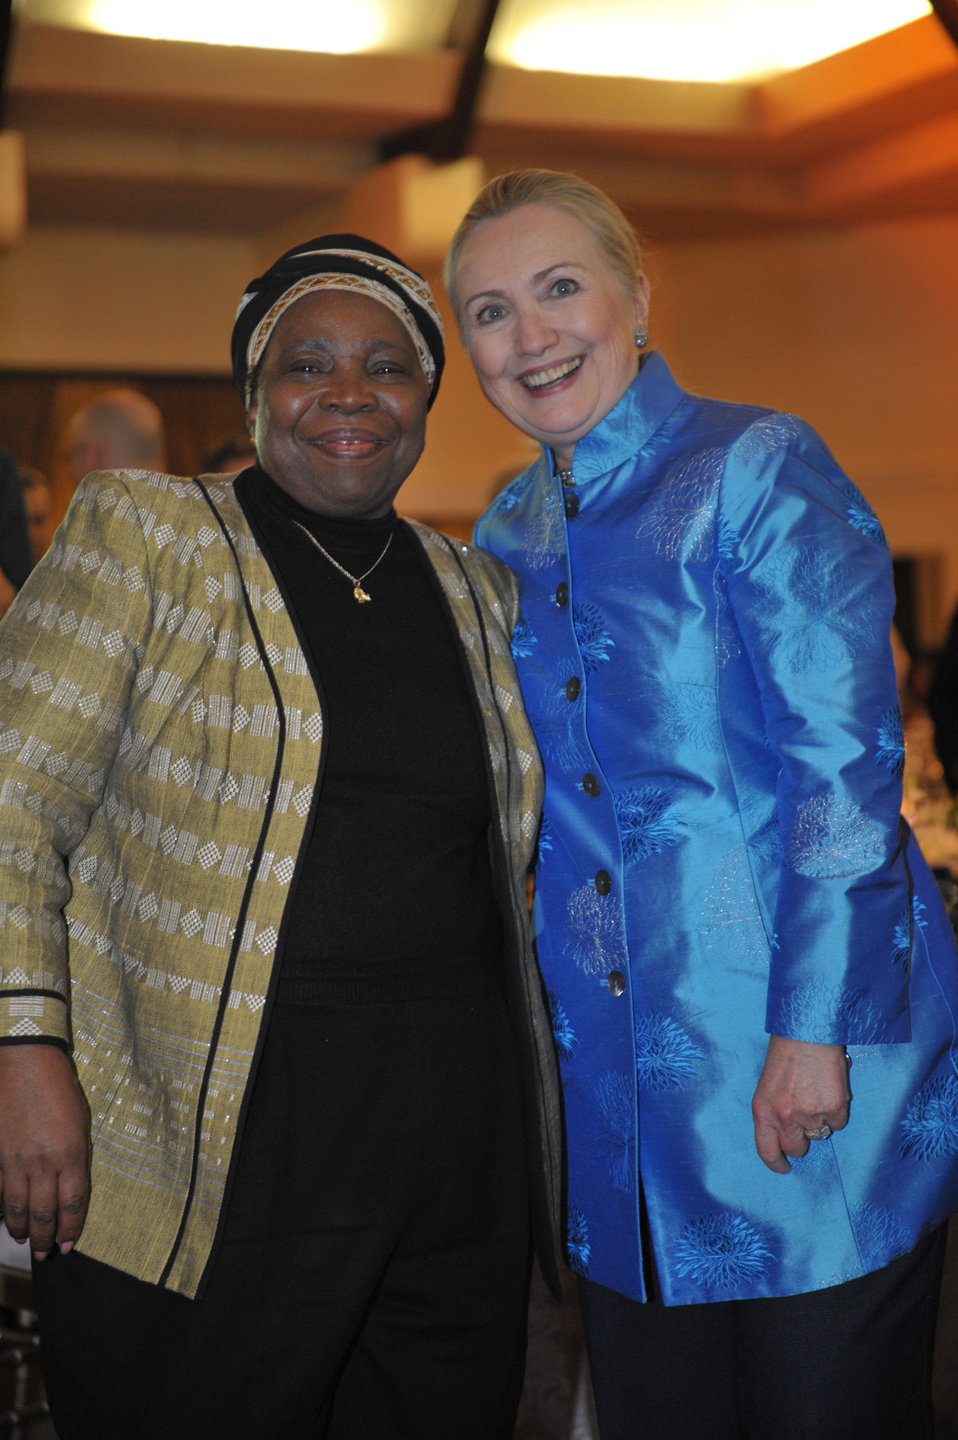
Secretary Clinton Meets With AU Chair-Designate Dlamini-Zuma

U.S. Secretary of State Hillary Rodham Clinton speaks with AU Chair-Designate Nkosazana Dlamini-Zuma at a dinner hosted by South African Foreign Minister Maite Nkoana-Mashabane in Johannesburg, South Africa, on August 7, 2012.